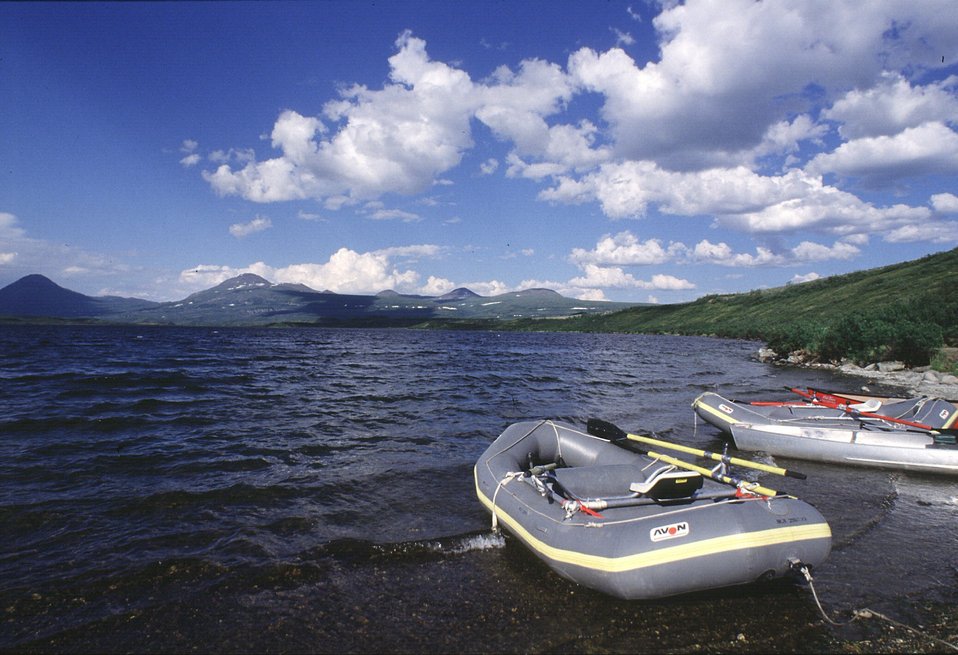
Rafts at Round Tangle Lake, Delta NWSR, Alaska